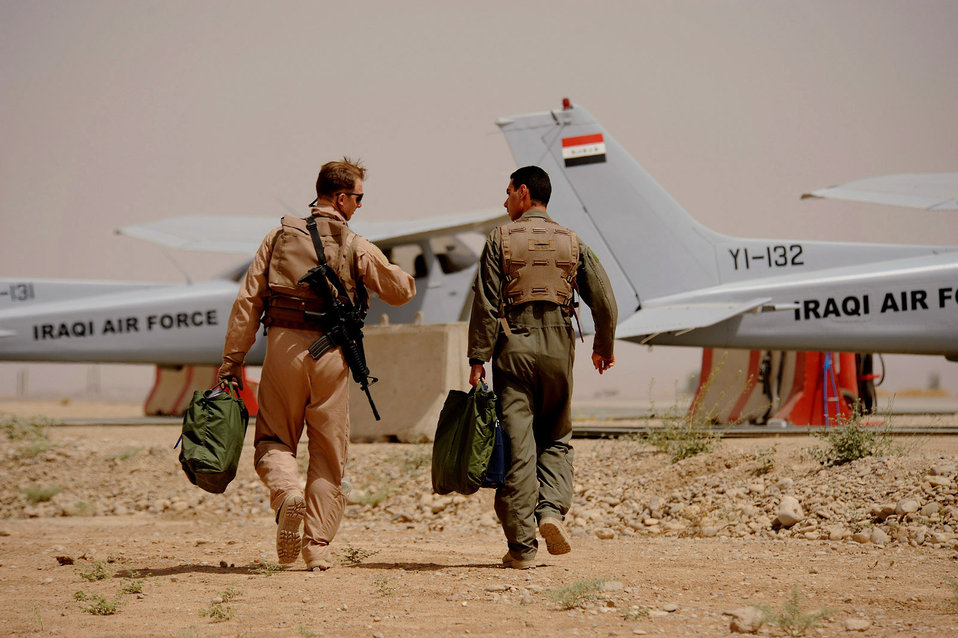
Let's do a flight check ...

Capt. Jamie Riddle and an Iraqi Flight Instructor School student walk to the flightline before a recent mission at Kirkuk Air Base, Iraq. The Iraqi air force recently established the school for Iraqi pilots. Captain Riddle is an instructor pilot with the 52nd Flying Training Squadron.